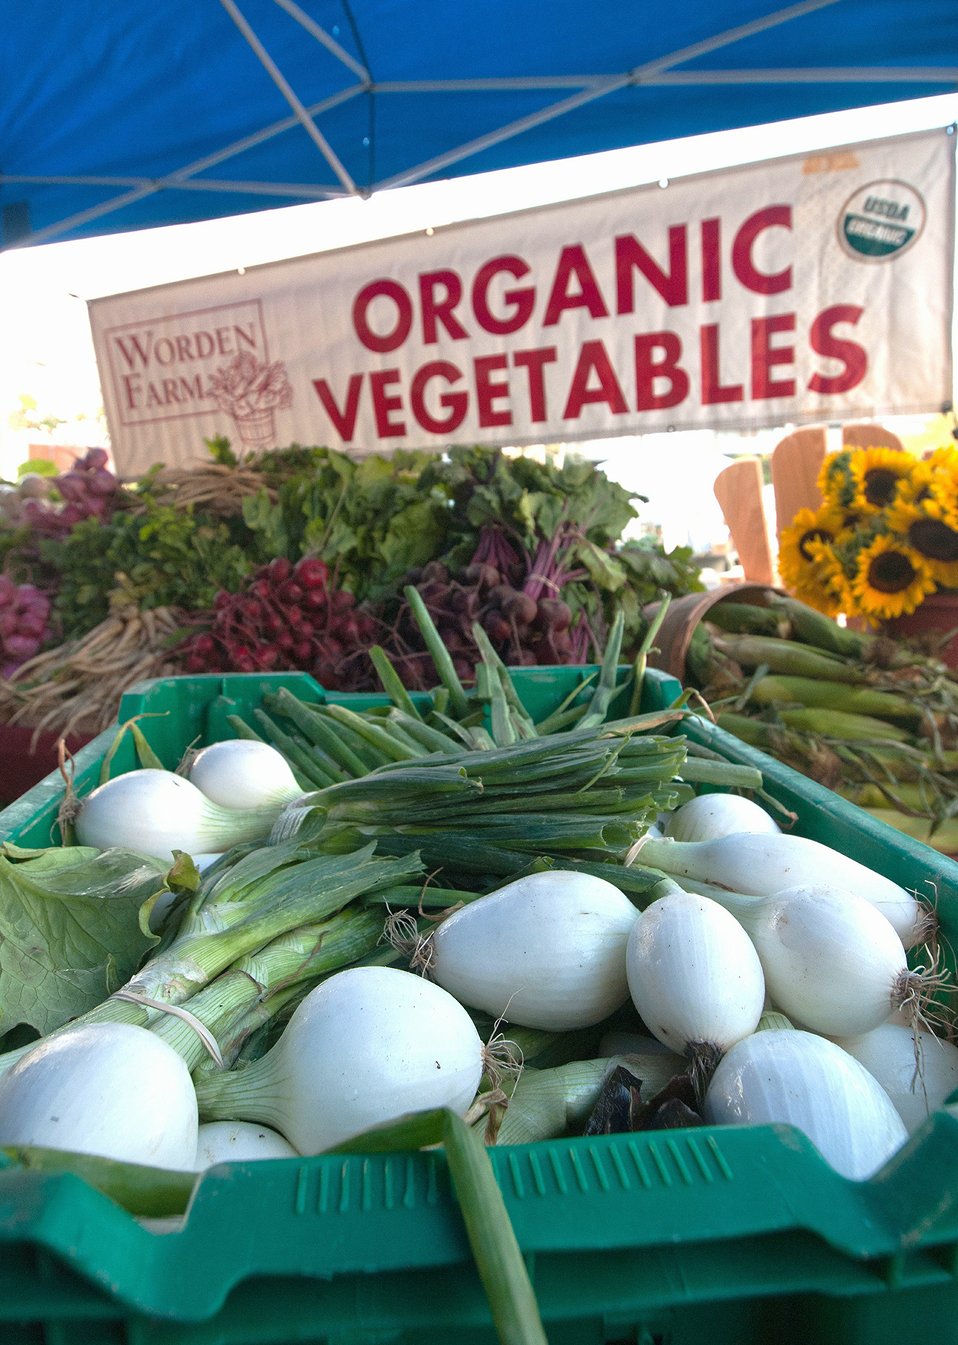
Worden Farm (www.wordenfarm.com) fresh picked organic sunflowers, nasturtium flowers (pepper flavor) and squash flowers (all decorative and edible) are ready for sale at the Saturday Morning Market, in St. Petersburg, FL, on April 14, 2012. Worden Farm is a family farm that provides certified organic produce to Southwest Florida through community supported agriculture (CSA) membership programs and retail sale at several farmer’s (community) markets. Chris Worden, Ph.D. and Eva Worden, Ph.D. founded and operates the farm that employs more than 20 people. Growing certified organic crops in the coastal sandy soil has required them to develop innovative farming techniques which help the farm as well as assist the studies of universities and farm industry. There are several Worden Farm apprenticeships that provide hands-on training in all aspects of the farm, to include direct marketing at the Saturday Morning Market, or other market sites. The farm also holds culinary and gardening workshops, and other interactive educational events. One of their organic certifications is from the U.S. Department of Agriculture (USDA) and they have partnered with the USDA Natural Resources Conservation Service (NRCS) for soil conserving windbreaks and long tunnel structures to nurture seedlings and extend the growing season.